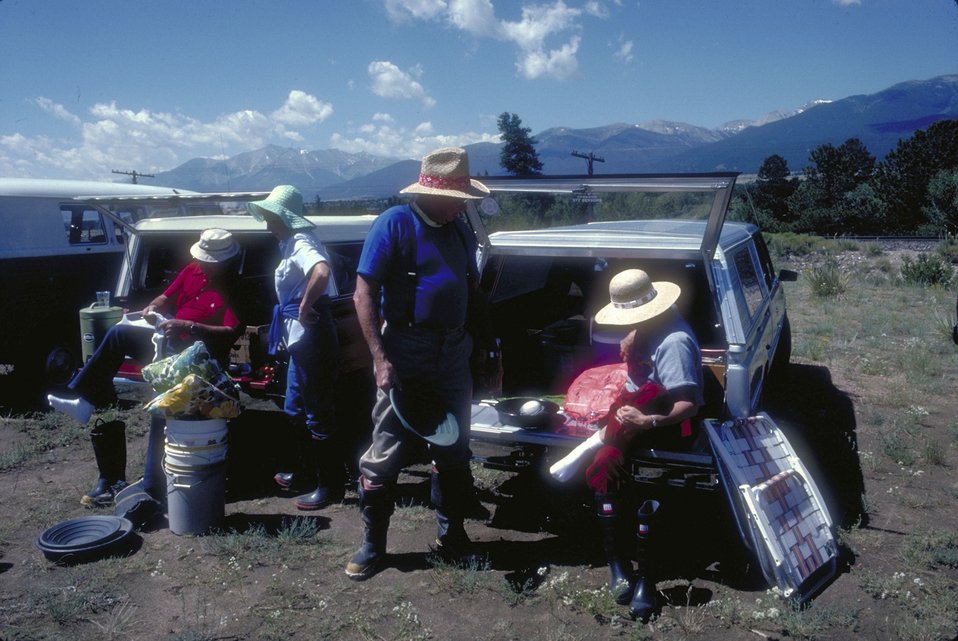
Gold Panning on the Arkansas River.